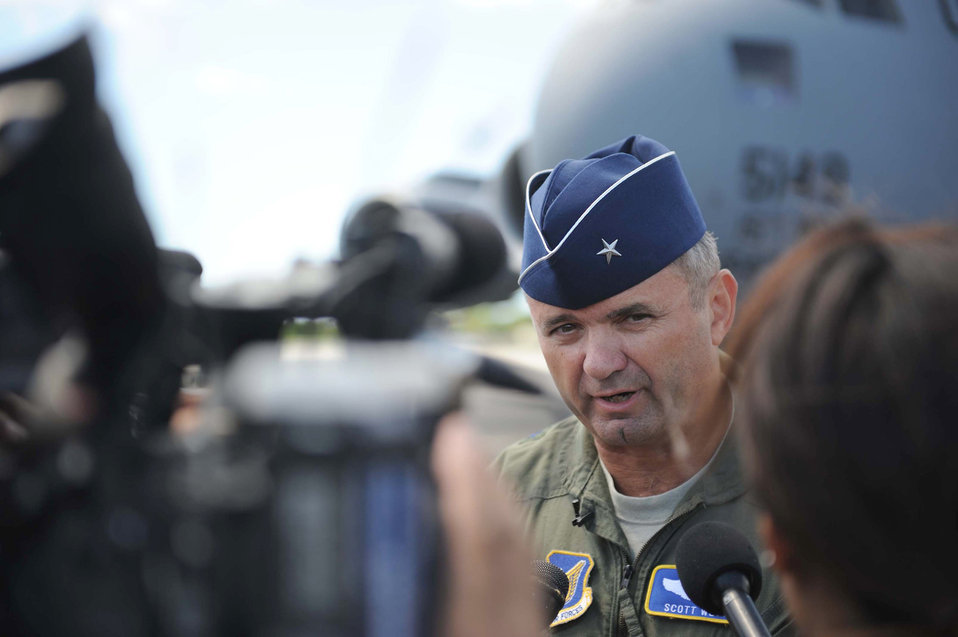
humanitarian mission to Japan

U.S. Air Force Brig. Gen. Scott West, the 13th Air Force vice commander, fields questions from the media at Joint Base Pearl Harbor-Hickam, Hawaii, before boarding a U.S. Air Force C-17 Globemaster III cargo aircraft preparing to depart on a humanitarian mission to Japan on March 12, 2011. The aircraft will be flown to various Air Force bases in Japan during its mission to provide support for Japan relief efforts in the wake of tsunami and earthquake damage there.